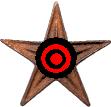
U2 barnstar, created in Microsoft Paint for Wikipedia:WikiProject U2.